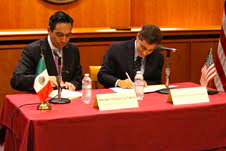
Announcement of Bilateral Initiative to Combat Stolen Mobile Devices 11.13.2012

Chairman Genachowski & Under-Secretary of Communications for Mexico Hector Olavarria Tapia signing the new bilateral initiative to help combat mobile device theft and the cross-border trafficking of mobile devices.